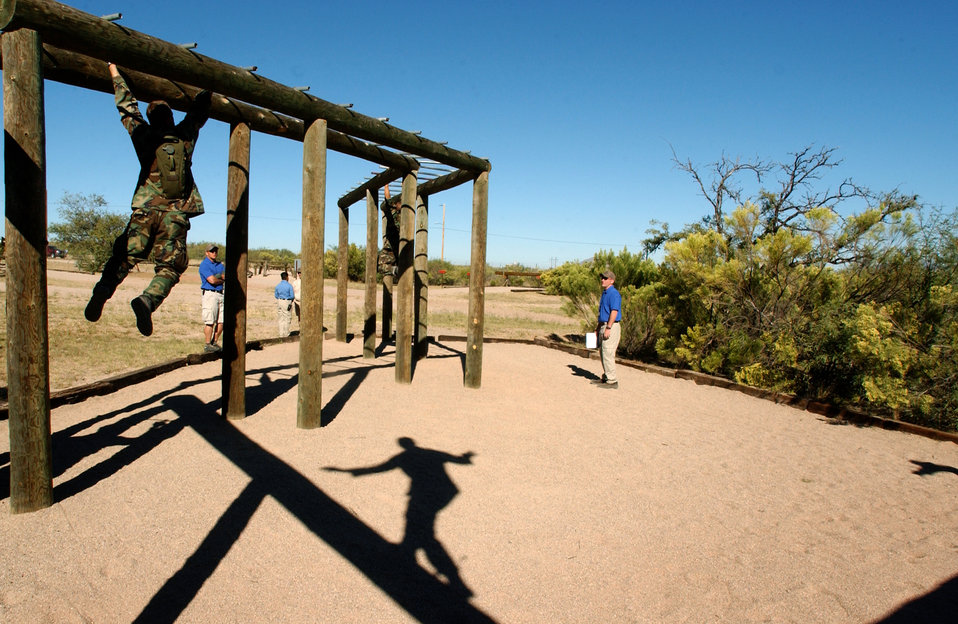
Tarzan

FORT HUACHUCA, Ariz. -- Members of the U.S. Air Forces in Europe Defender Challenge team tackle the training obstacle named